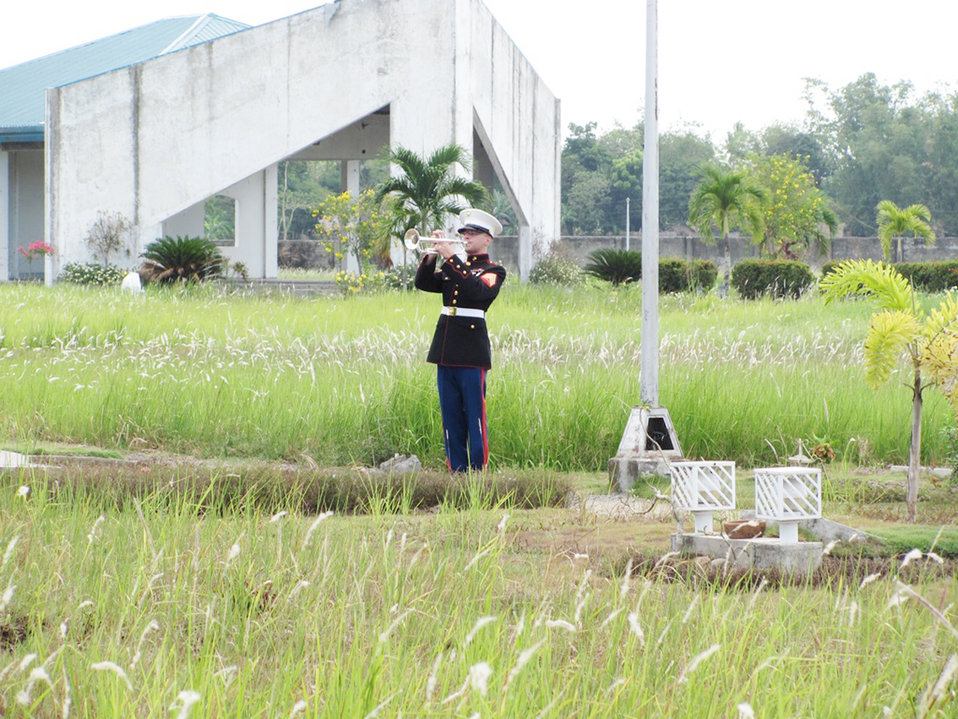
U.S., Philippine officials provide final resting place for Airman

Marine Sgt. Aaron Wagners plays taps during the funeral for Tech. Sgt. Raymond Natividad who was buried April 27, 2010, in Bacolod, Philippines. Sergeant Wagners is a bugler from the 3rd Marine Band on Okinawa.